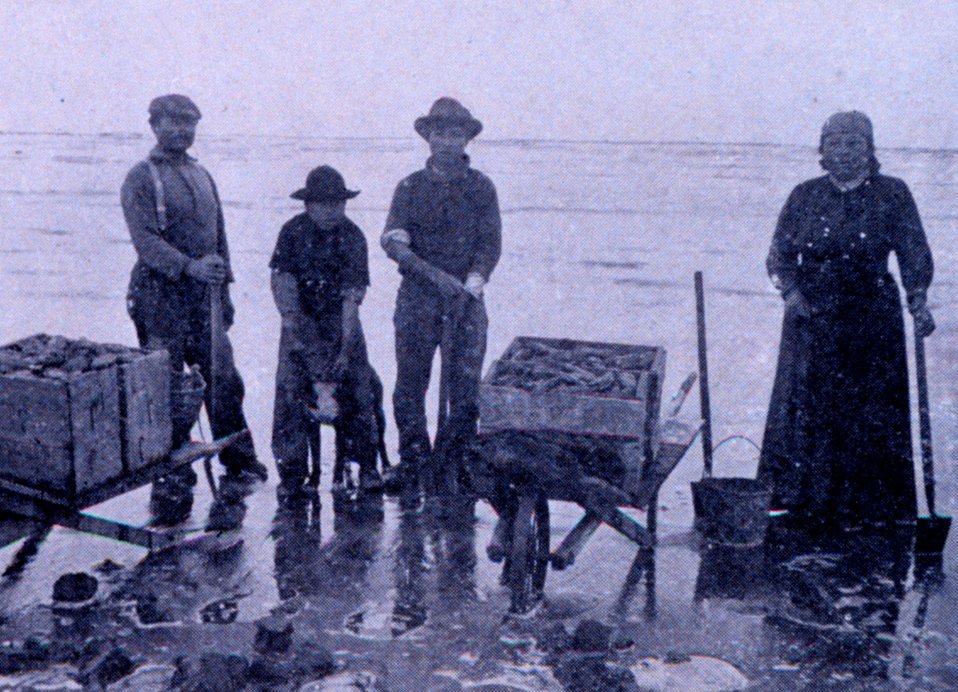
'Digging Razor Clams at Copalis.' In: 'Puget Sound and Western Washington Cities-Towns Scenery', by Robert A. Reid, Robert A. Reid Publisher, Seattle, 1912. P. 159.